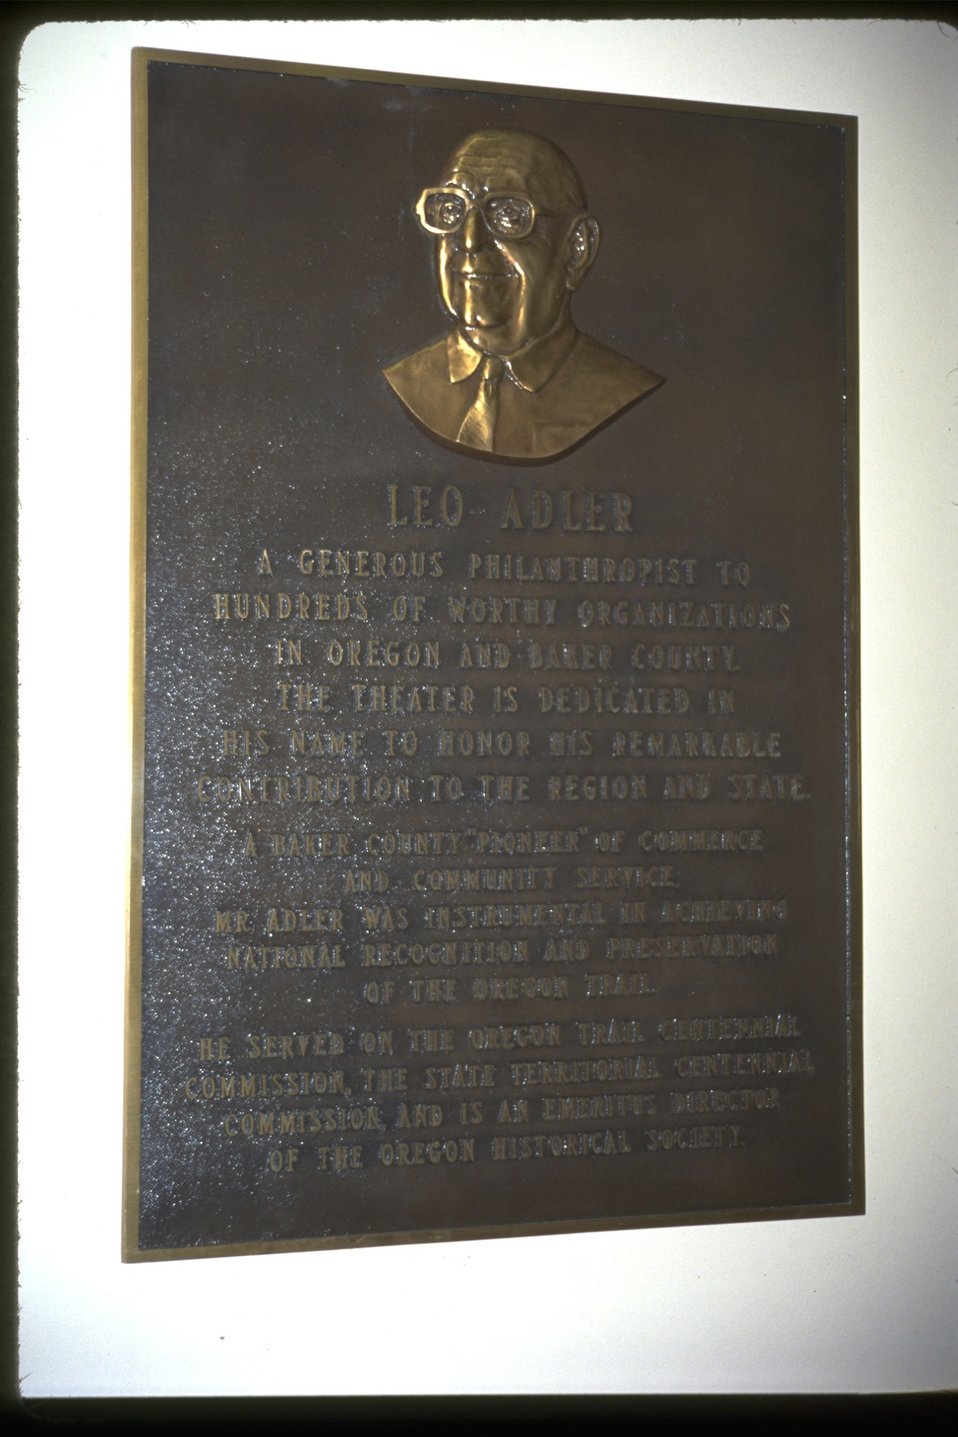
Acknowledgement plaque of Leo Adler at the NHOTIC.